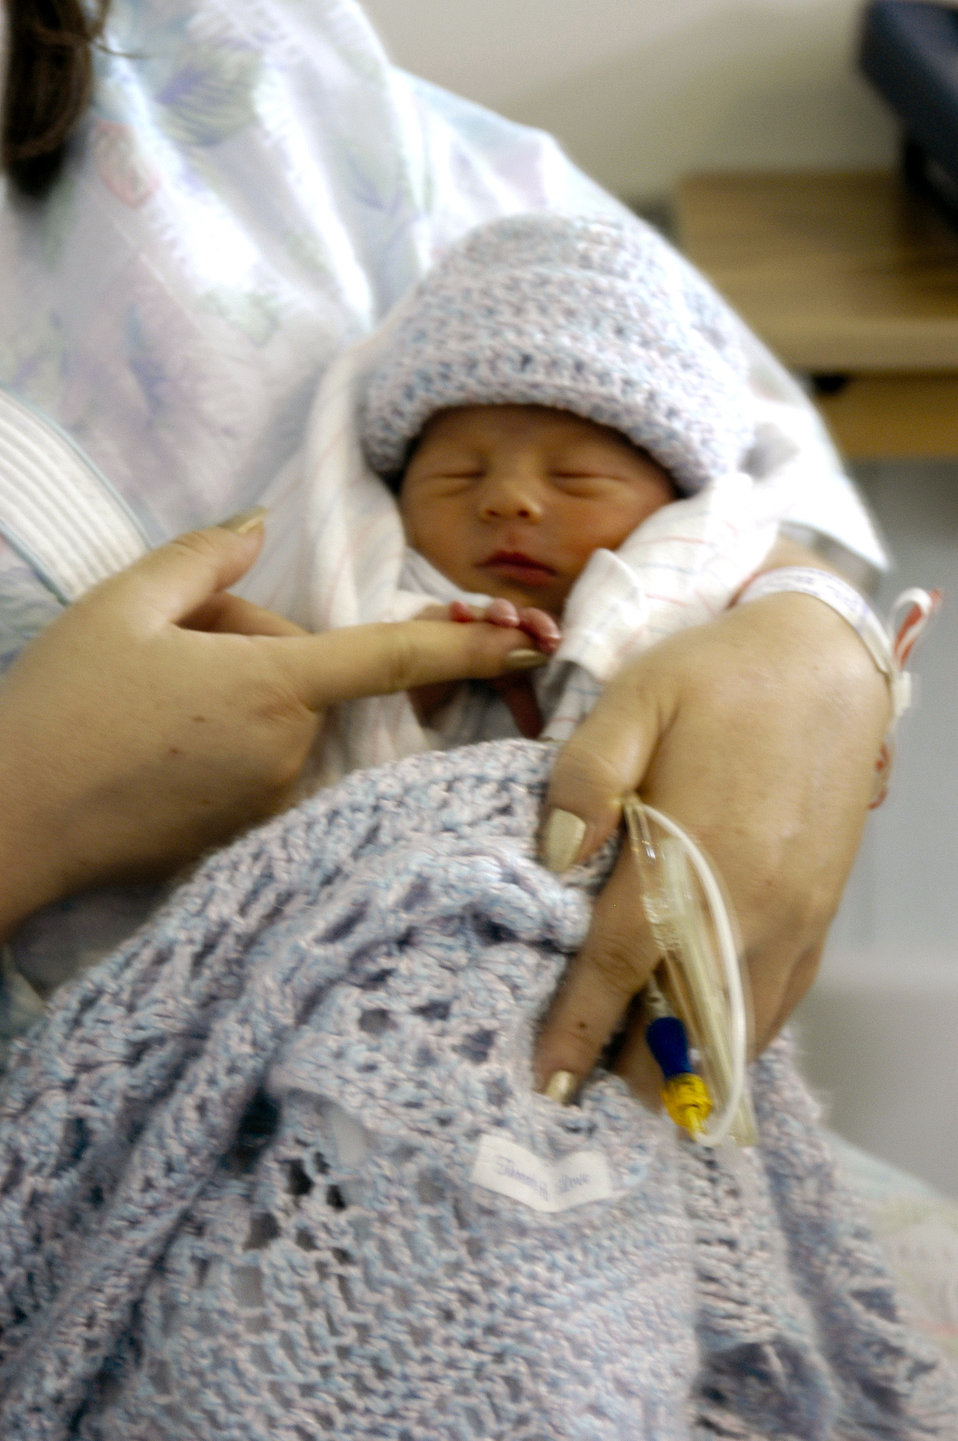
WHMC Baby friendly hospital

A mother holds her baby at Wilford Hall Medical Center at Lackland Air Force Base, Texas, which has been named a